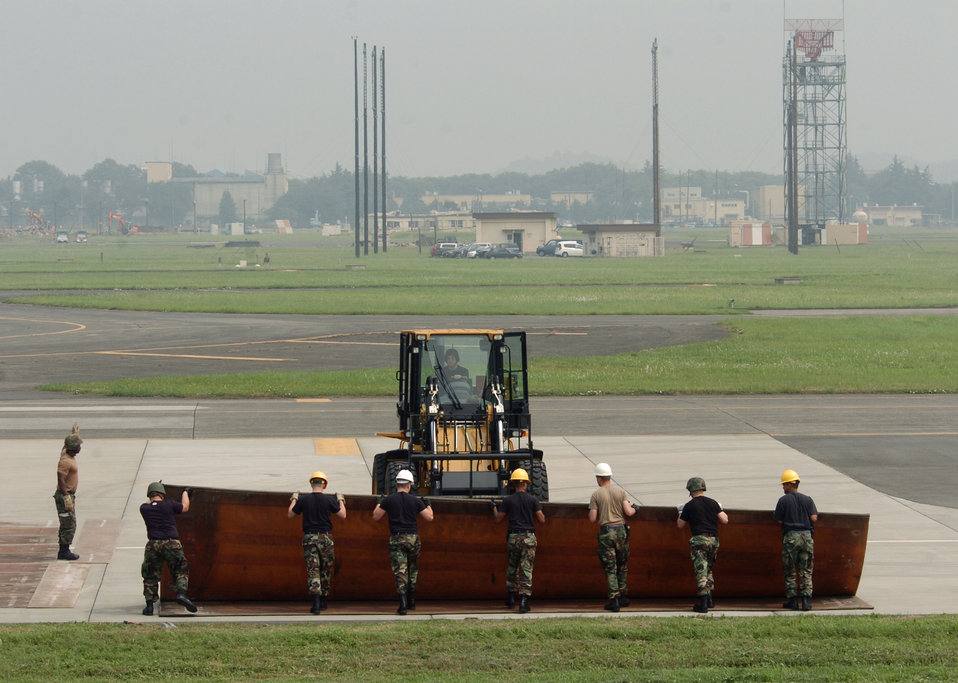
Running fiber

YOKOTA AIR BASE, Japan -- Airmen of the 374th Civil Engineer Squadron move fiberglass mats during airfield damage repair training on the flightline here. During the training, the Airmen simulated drilling holes into the runway to secure the mats. The mats provide a protective surface for aircraft landing in austere locations. The Airmen are trained to deploy into bare-base locations, assess airfield capabilities, prepare aircraft landing areas, clear obstacles, install emergency airfield lighting systems and repair airfield damage.